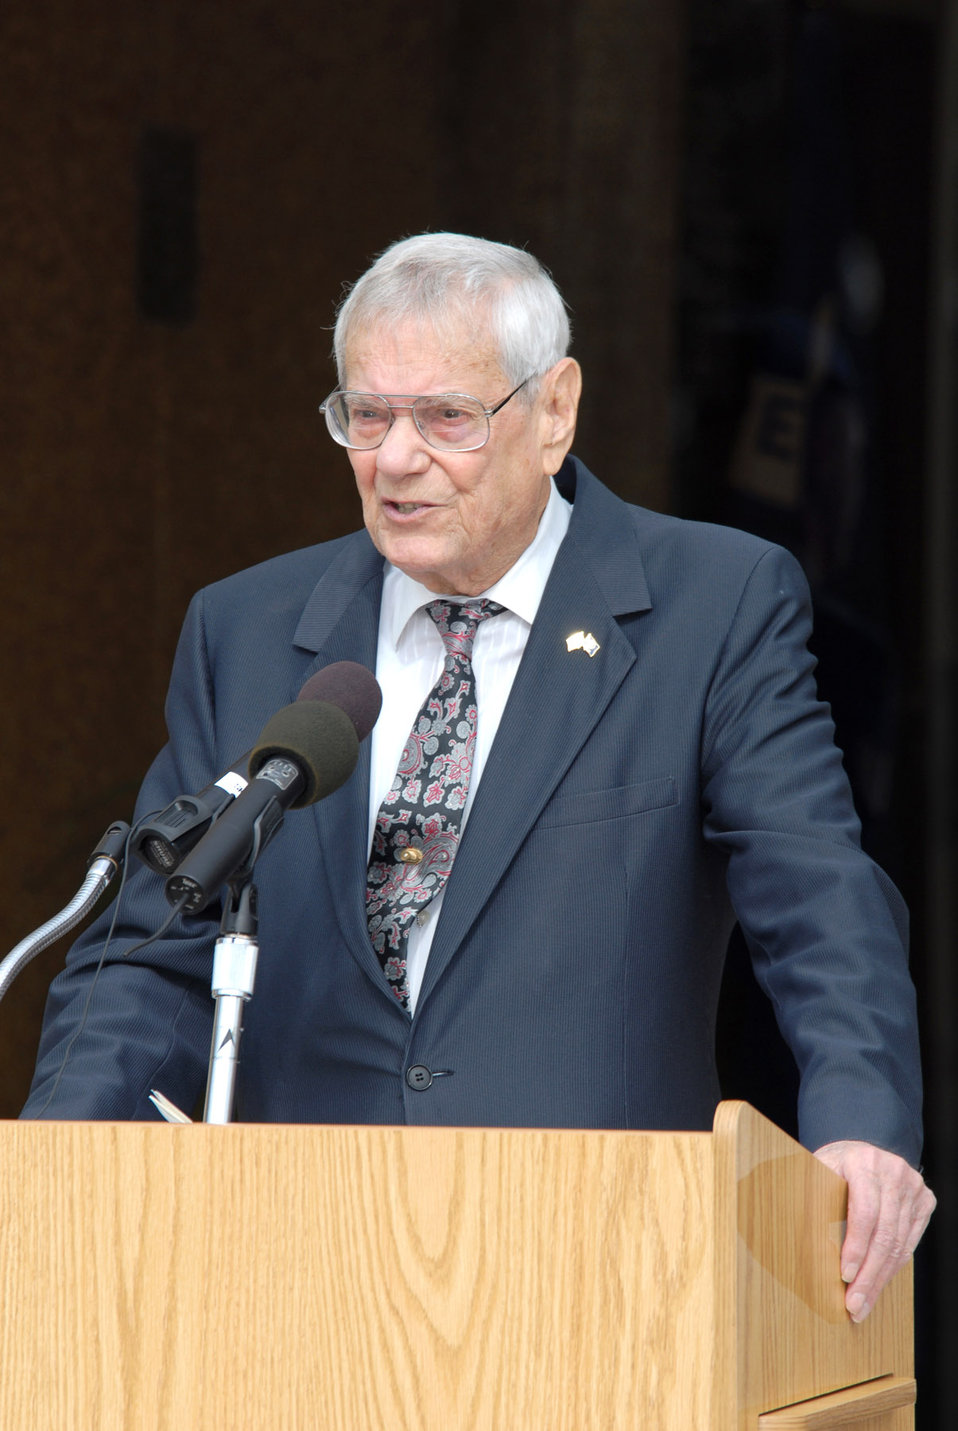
Tyndall NCO Academy renamed after first CMSAF

Former Chief Master Sgt. of the Air Force Paul Airey speaks during the dedication of the NCO Academy named in his honor Dec. 13 at Tyndall Air Force Base, Fla.